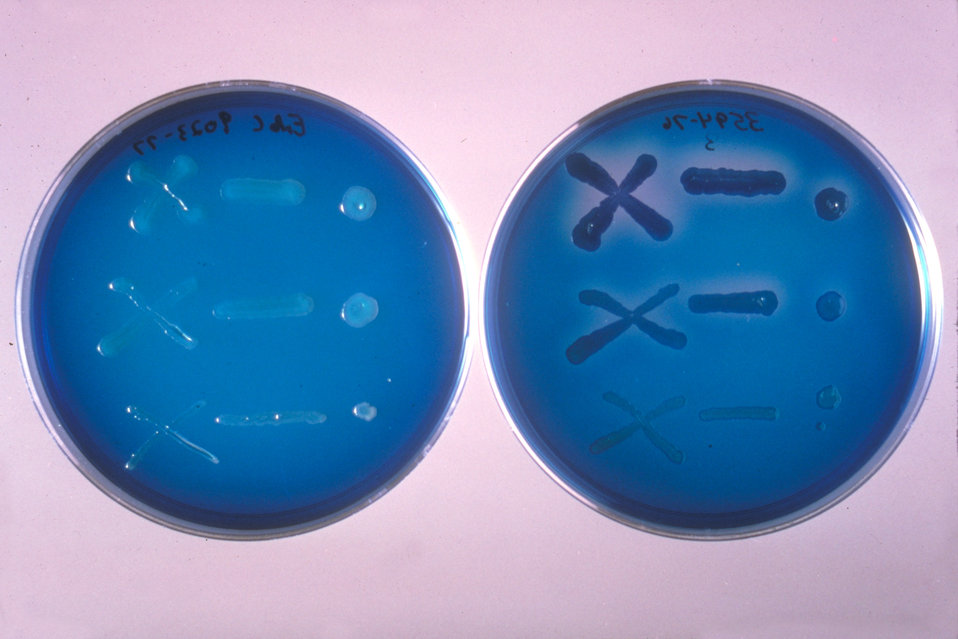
These are plate cultures of Enterobacter sakazakii (right) and E. cloacae (left) during a DNAase reaction.